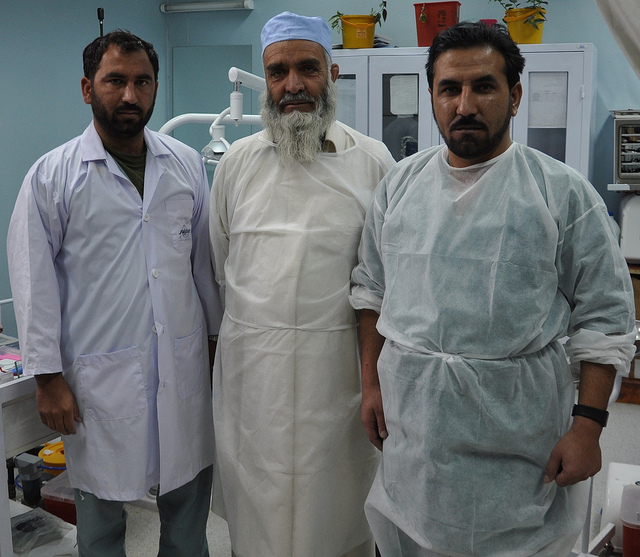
Patika Regional Military Hospital

The Paktia Regional Military Hospital dental team poses for a picture Dec. 1, 2011, at Gardez Fire Base, Afghanistan. Nasir, Dost and Jant just received their first adviser, Maj. Courtney Schapira.